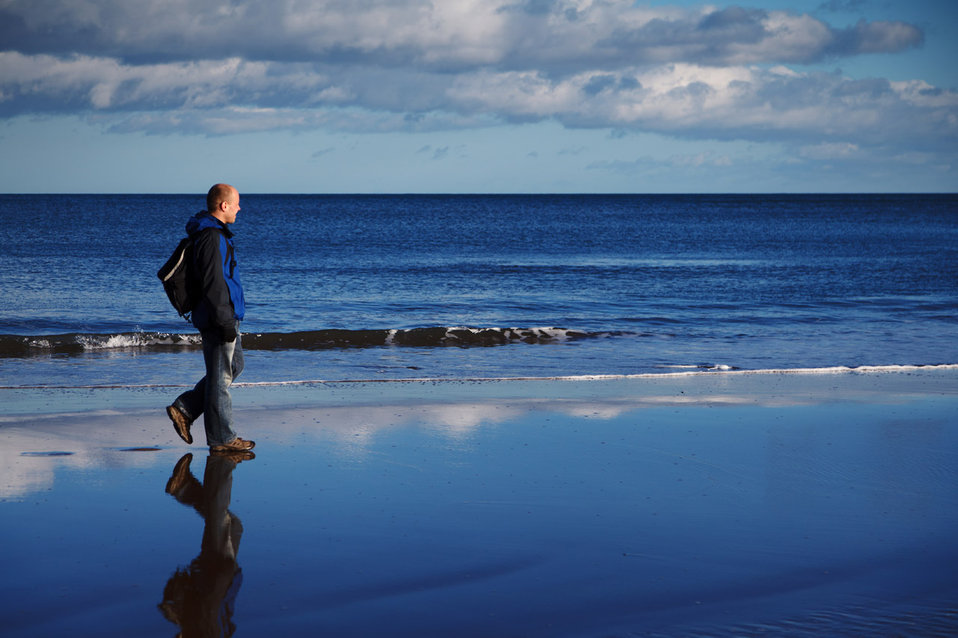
Walking on the beach

Young man walking on the beach.